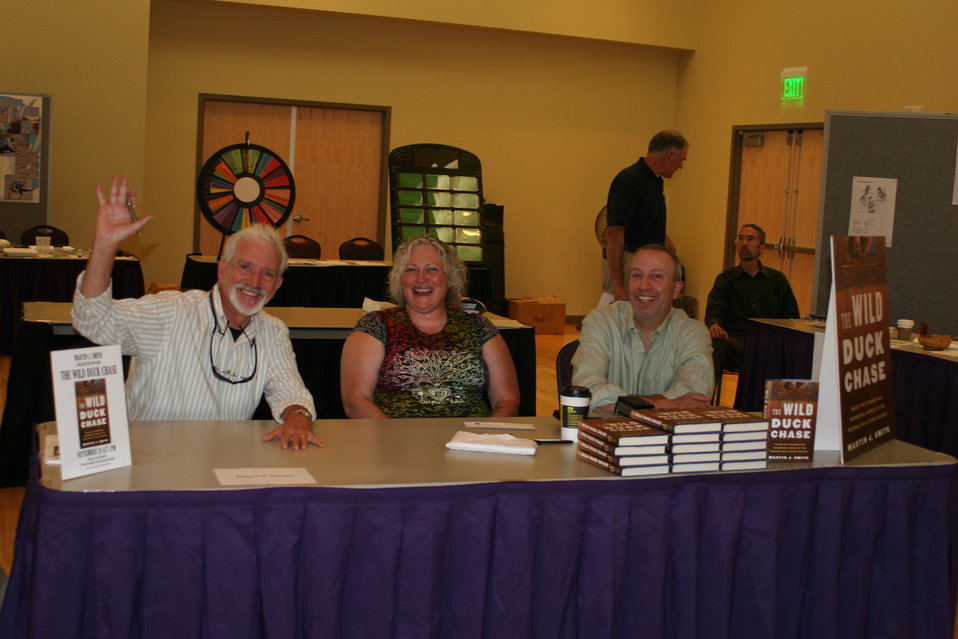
Outreach

Photo Credit: Suzanne Fellows / USFWS
The U.S. Fish & Wildlife Service sponsored the 2012 Federal Duck Stamp Art Contest September 28 and 29 in Ogden, Utah, at Weber State University. A panel of five judges was responsible for choosing the art work used to design the 2013-2014 Migratory Bird Hunting and Conservation Stamp.